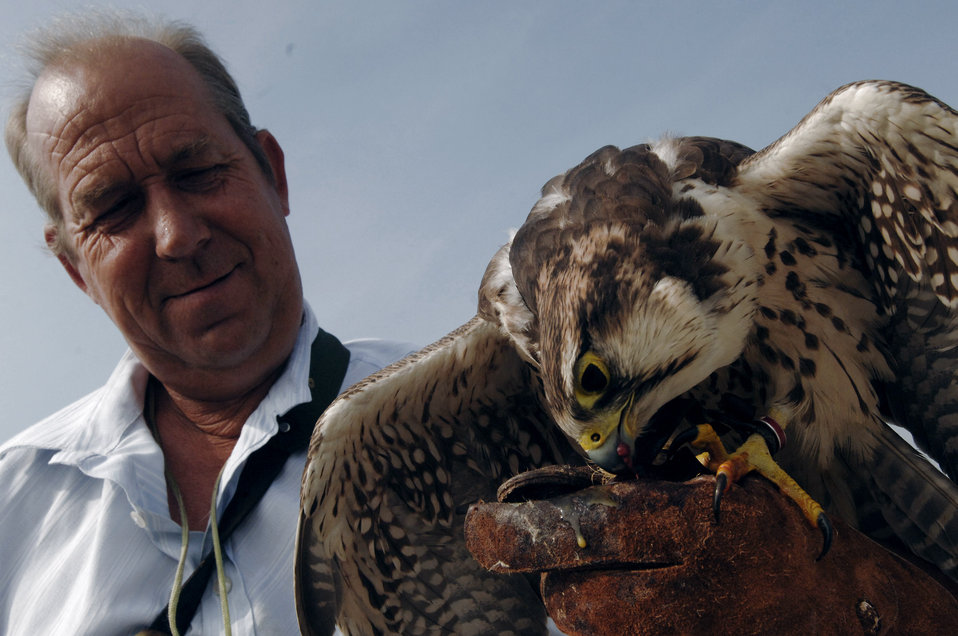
Air Force works aggressively to reduce bird strikes

Keith Mutton, who helps to run the U.S. Air Force's Bird/Wildlife Aircraft Strike Hazard program at the Royal Air Force base in Mildenhall, England, rewards Goldie, a 9-year-old Moroccan lanner hawk, for helping to rid the base of birds. Goldie can launch from Mr. Mutton's arm at up to 40 mph to chase away and ward off unwanted birds that are safety threats.